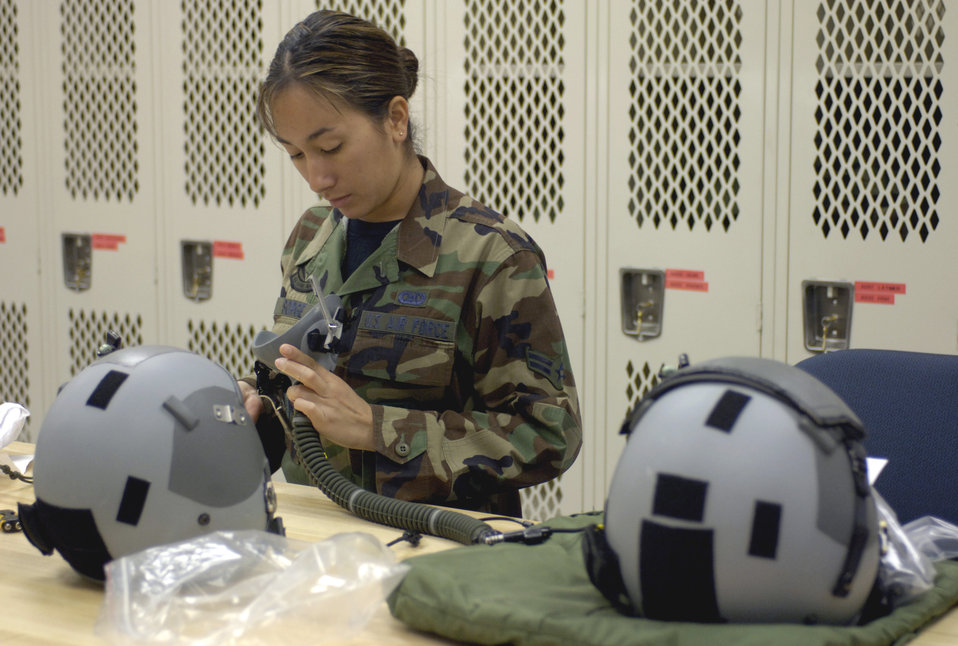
Life support

HICKAM AIR FORCE BASE, Hawaii (AFPN) -- Airman First Class Asti Sorge inspects and cleans an aircrew helmet and oxygen equipment. The life support shop is a combination of Hawaii Air National Guard and active-duty Airmen who support the 15th Airlift Wing, 154th Wing and transient aircraft. Airman Sorge is with the 204th Airlift Squadron.